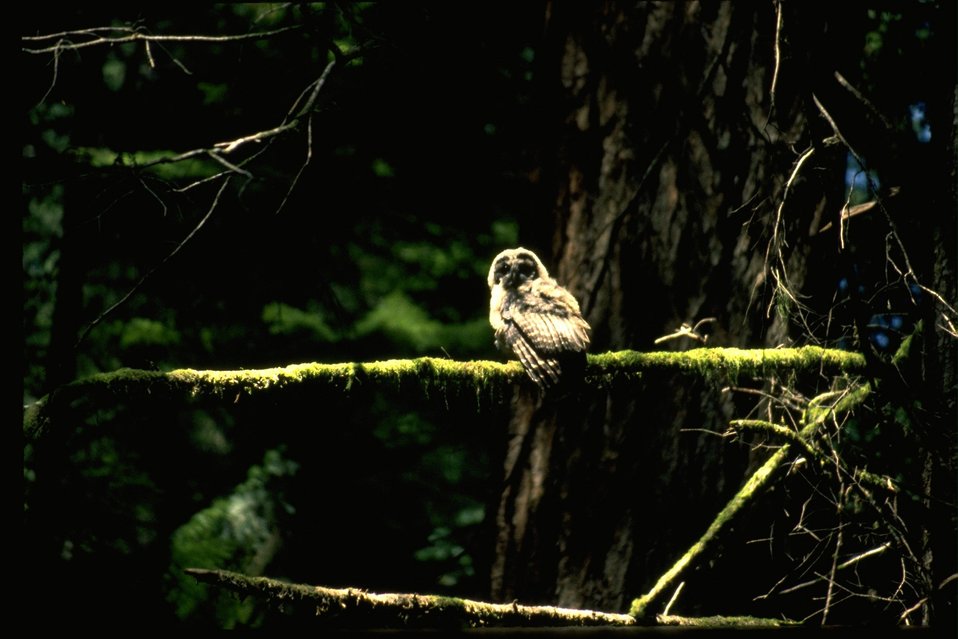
Baby Northern Spotted Owl at Doe Creek.